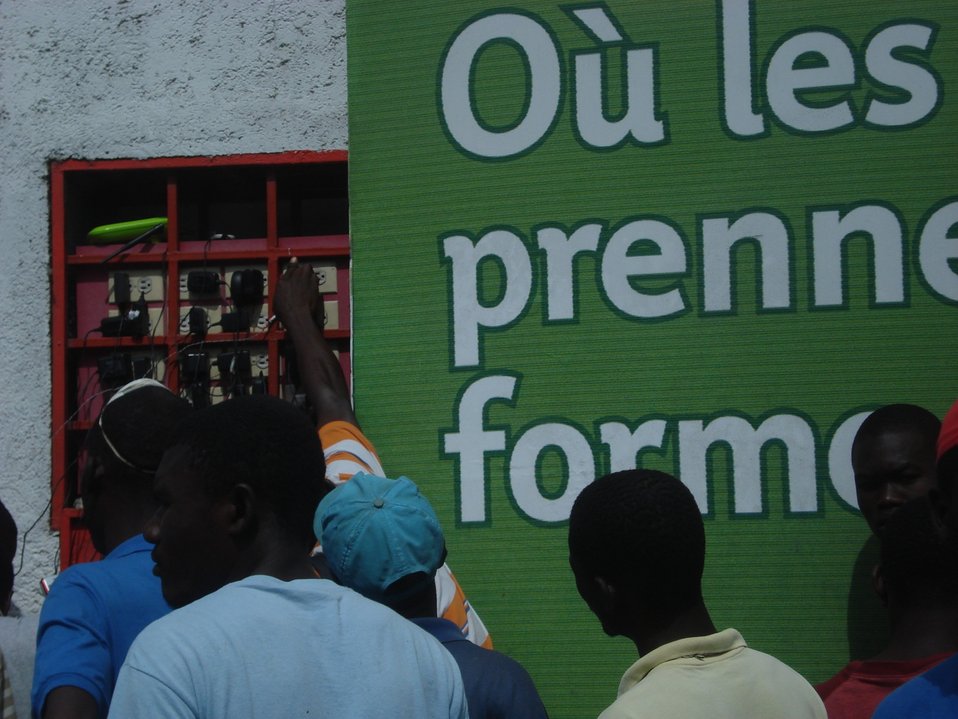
Cell Phone Charging Station (Haiti Earthquake - 2010)

Photos shot by team sent by the FCC to assist communications recovery in Haiti. Photos shot by team sent by the FCC to assist communications recovery in Haiti.